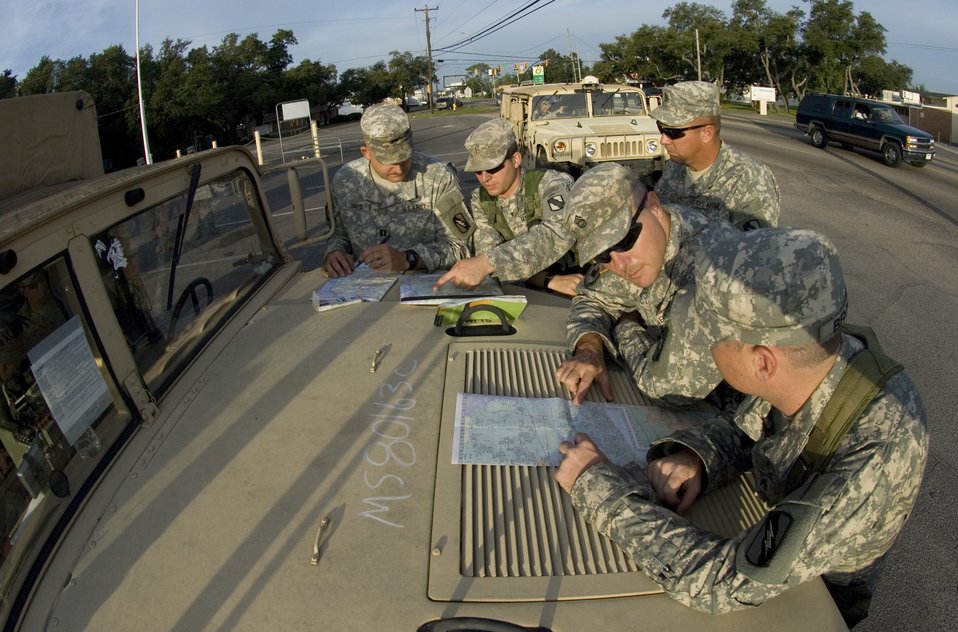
Army Guardsmen start evacuation mission

Army National Guard soldiers review neighborhood maps prior to visiting mobile home residents in Gulfport, Miss., to inform them of a mandatory evacuation order issued Aug. 31. All FEMA trailer residents in Gulfport are under this order in anticipation of Hurricane Gustav making landfall. The Army guardsmen are from A-troop, 1-98 Cavalry Regiment from Pontotoc, Miss.